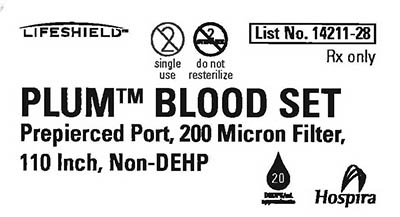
RECALLED – Blood sets used for the administration of blood and blood products

August 13, 2013 – Product Recall – Hospira Issues Important Safety Information for Blood Sets.